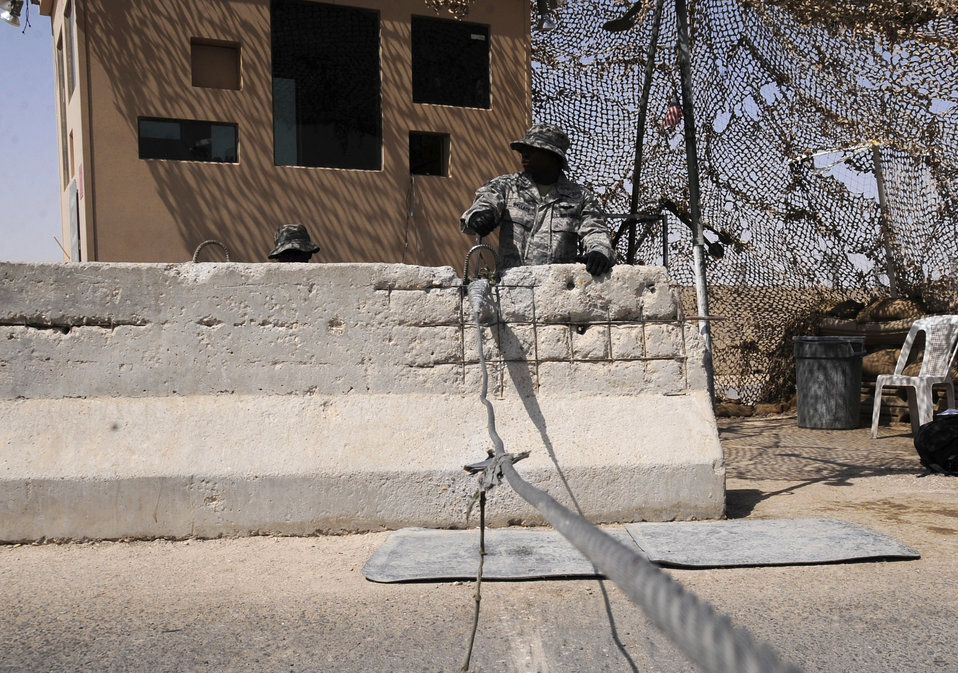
Laying Down the Force at Ali

Senior Airman Vincent Wallace stands post at an entry control point July 24. The Force Protection Section is tasked with maintaining the installation's internal safety of the base. In addition to their attendant duties, FP escorts compliment security forces in securing coalition assets and personnel while enabling the group's mission. Airman Wallace is deployed from Hurlburt Field Air Force Base, Fla., and is assigned to the 407th Expeditionary Security Forces Squadron.